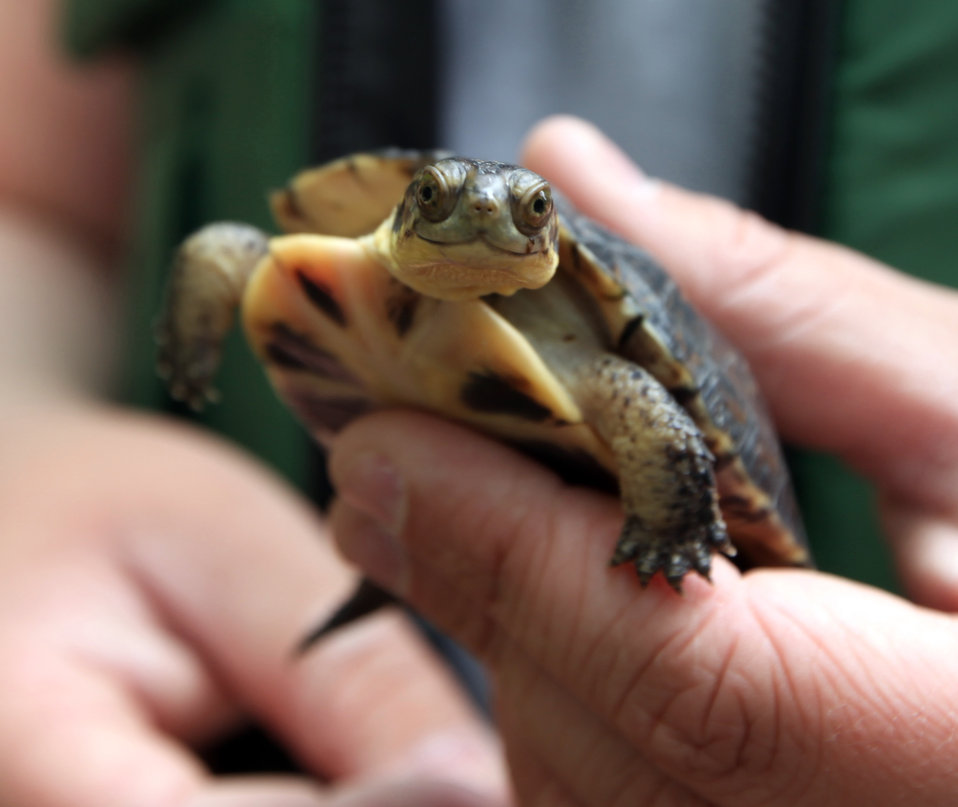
Photo of the week - Blanding's turtle (MA)

Photo of the Week - 05/31/11

This photo of the Blanding's turtle was taken at the Assabet River National Wildlife Refuge (MA) on May 26, 2011, during a Blanding's turtle head start program release. Students from the Bristol Agricultural School released 51 turtles they raised from hatchlings. This is a close-up of a hatchling in a student's hand.